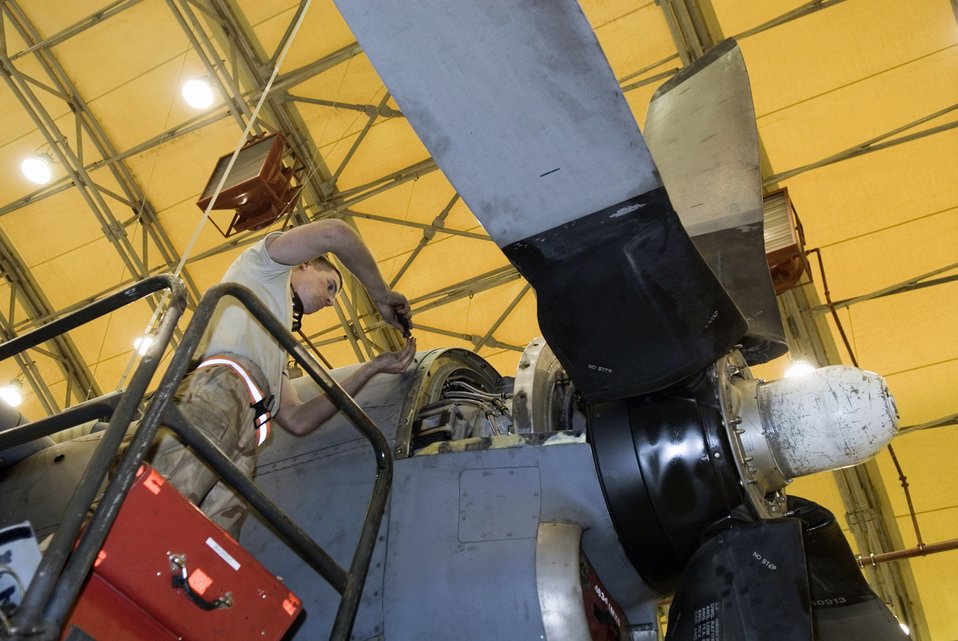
What's under the hood

Airman 1st Class Devon Loftis closes the engine hatch of a C-130 Hercules after lubricating engine components during a 90-day engine inspection Jan. 4 at Balad Air Base, Iraq. Engines on the aircraft are thoroughly checked and replenished with fluids during the inspections. Airman Loftis is an aircraft maintenance unit crew chief for the 777th Expeditionary Airlift Squadron and is deployed from F.E. Warren Air Force Base, Wyo.